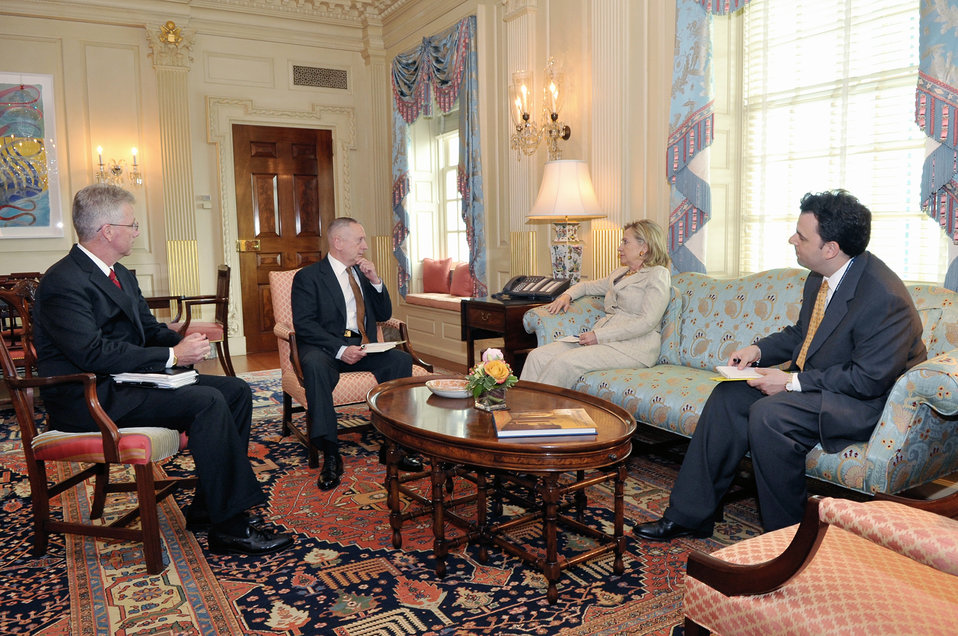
Secretary Clinton Meets With Gen. Mattis

U.S. Secretary of State Hillary Rodham Clinton meets with Gen. James Mattis at the U.S. Department of State in Washington, D.C., on August 4, 2010.